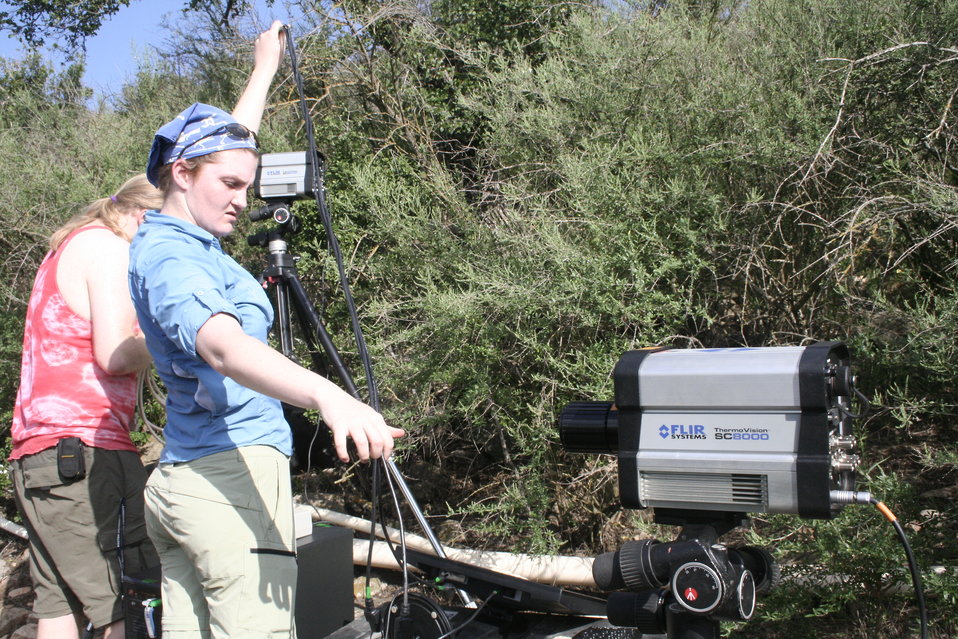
Setting up cameras at Davis Cave